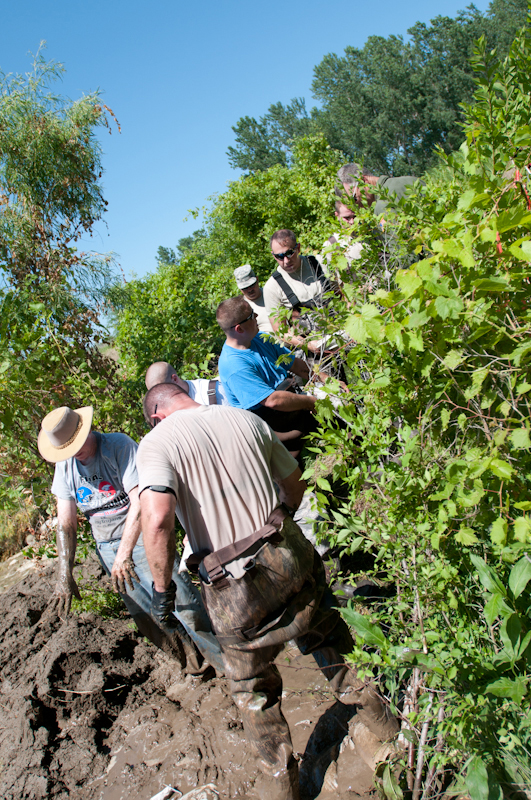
Air Guardsmen fight flood

Airmen from the Missouri Air National Guard's 139th Airlift Wing in St. Joseph, Mo., who are at the end of a sandbag line of fellow Airmen, place sandbags June 30, 2011, in an effort to fight rising flood waters near Elwood, Kan.